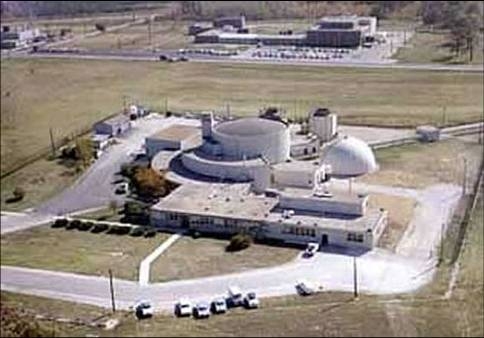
Argonne Recovery Act Workers Remove Waste, Demolish Cold War Legacy Buildings New Mexico.